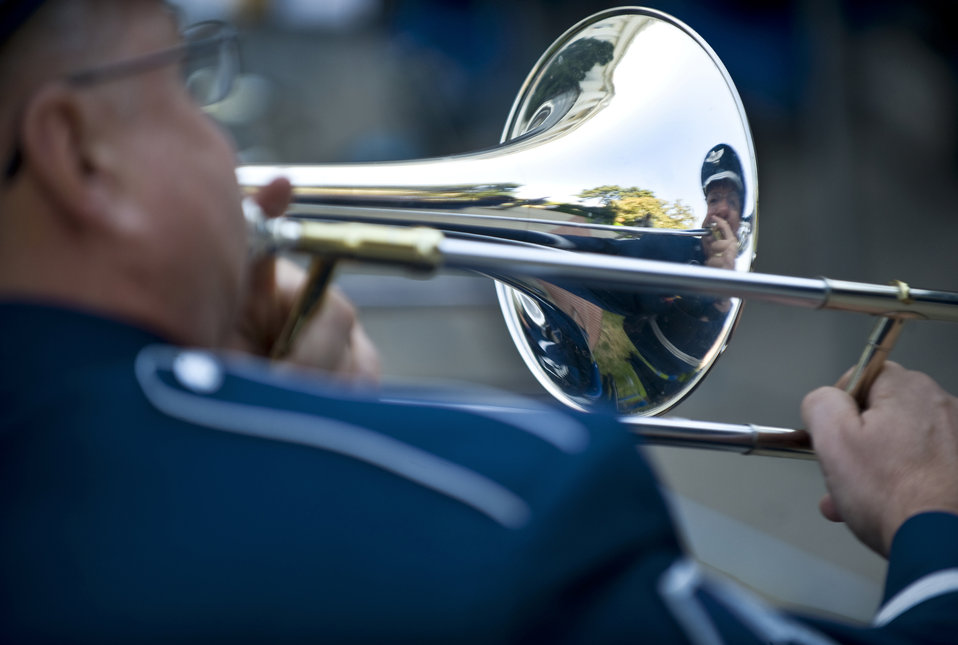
Air Force Week-Sacramento

Master Sgt. Cecil Benjamin along with members of the U.S. Air Force Band of the Golden West plays